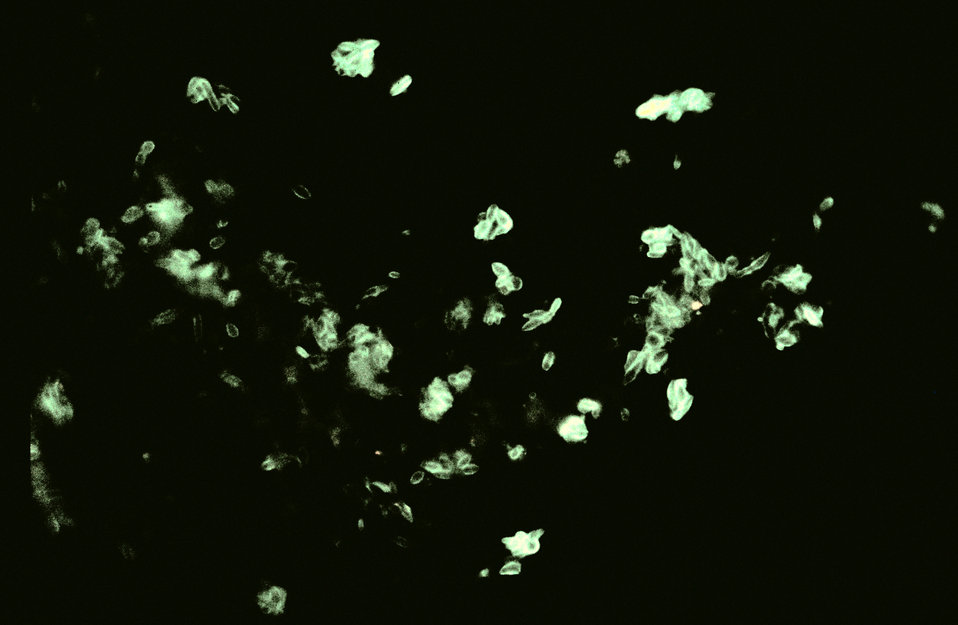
Using a direct FA stain, this slide demonstrates the histopathology of sporotrichosis due to Sporothrix schenckii.